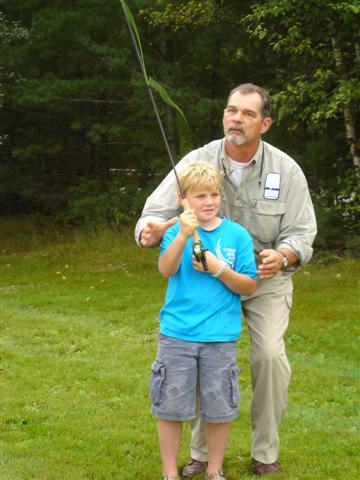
Nulhegan Wildlife Festival Fly Fishing Demo

Nulhegan Basin Division, Silvio O. Conte National Wildlife Refuge.